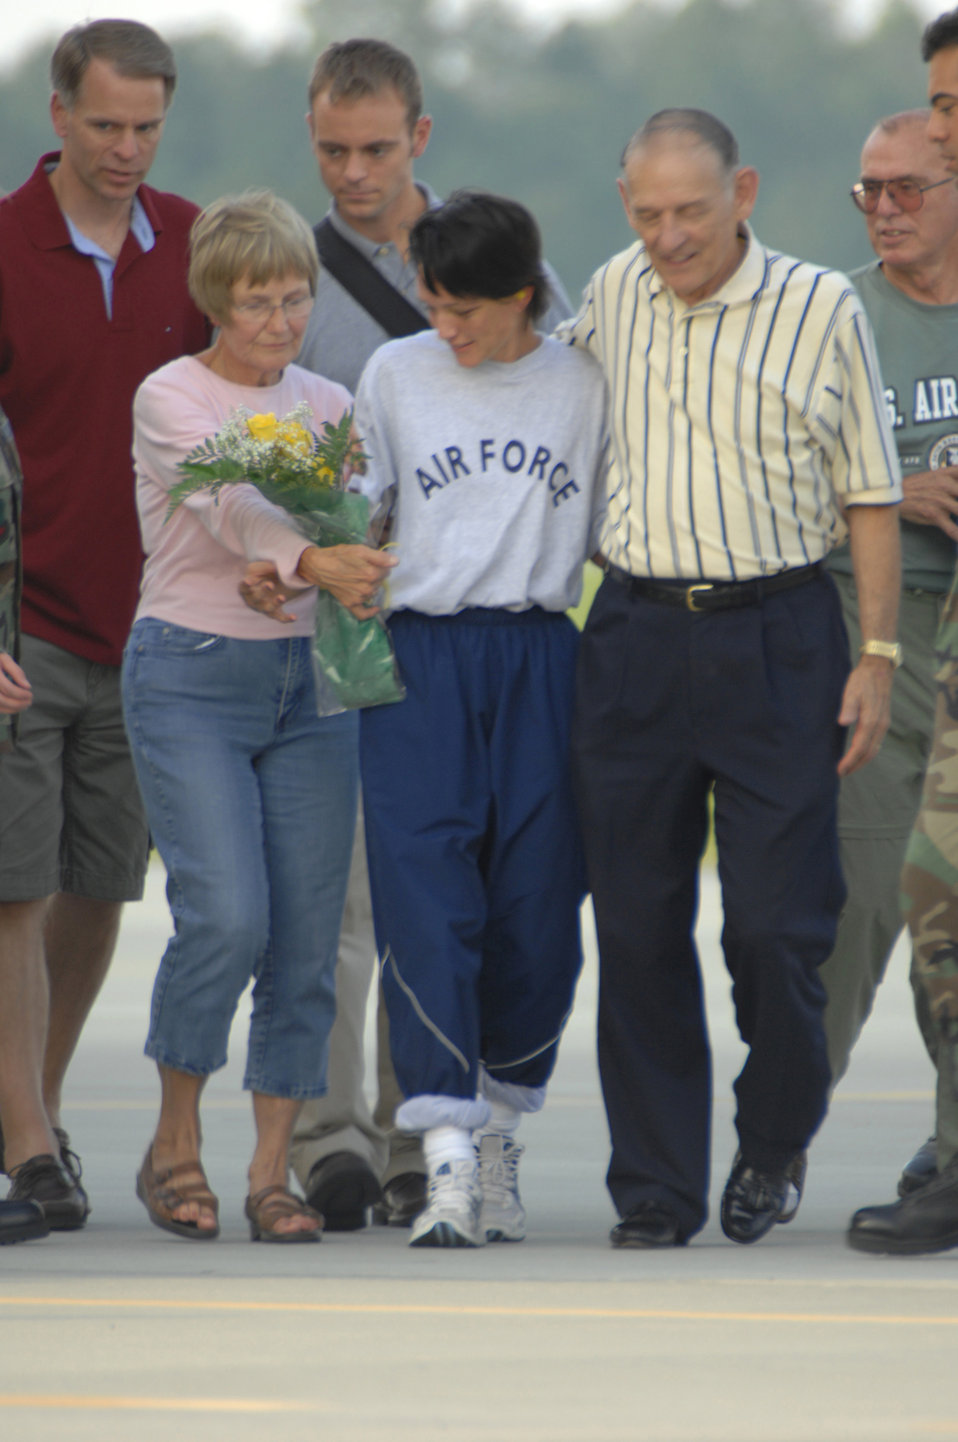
Major Jill Metzger arrives home

Maj. Jill Metzger (center in Air Force shirt) talks with family members after arriving at Moody Air Force Base, Ga., Sept. 14. Major Metzger, deployed to Manas Air Base, Kyrgystan, as part of an Air Expeditionary Task Force, was reported missing on Sept. 5. Kyrgyz law enforcement officials found her Sept. 8. Subsequently she was transported to Landstuhl Regional Medical Center near Ramstein Air Base, Germany, for debriefings and medical evaluations.